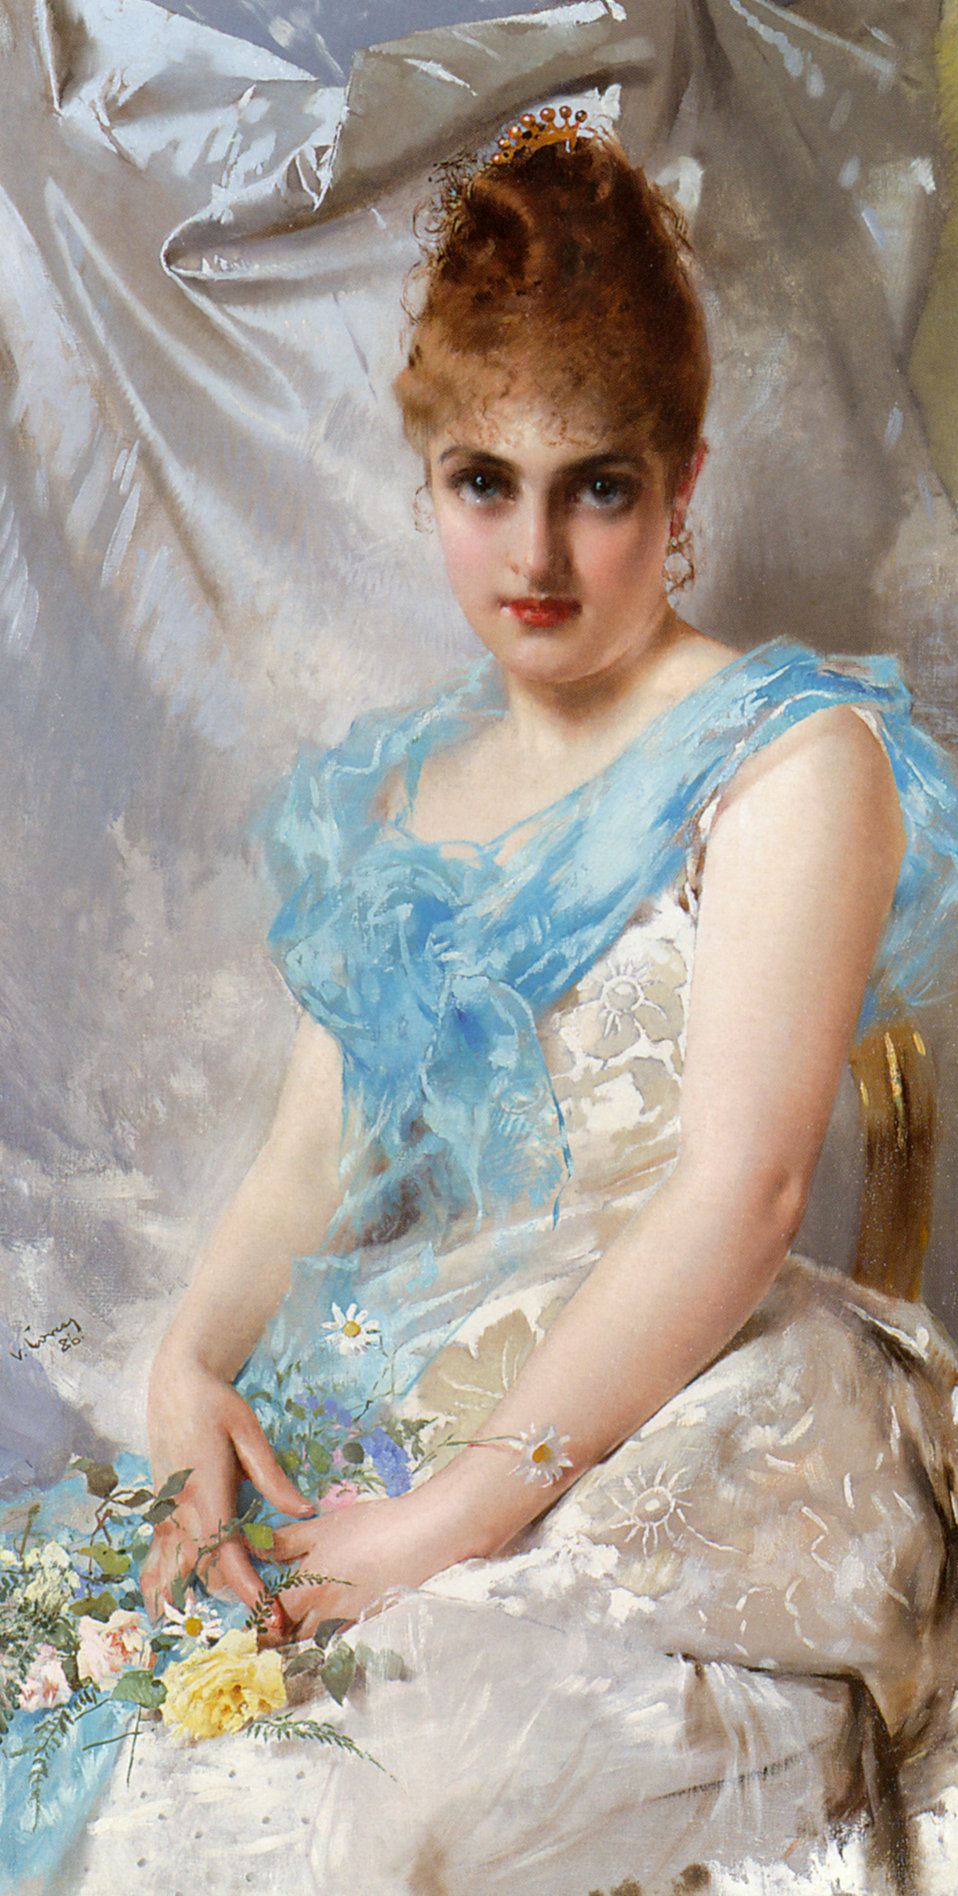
A Spring Beauty